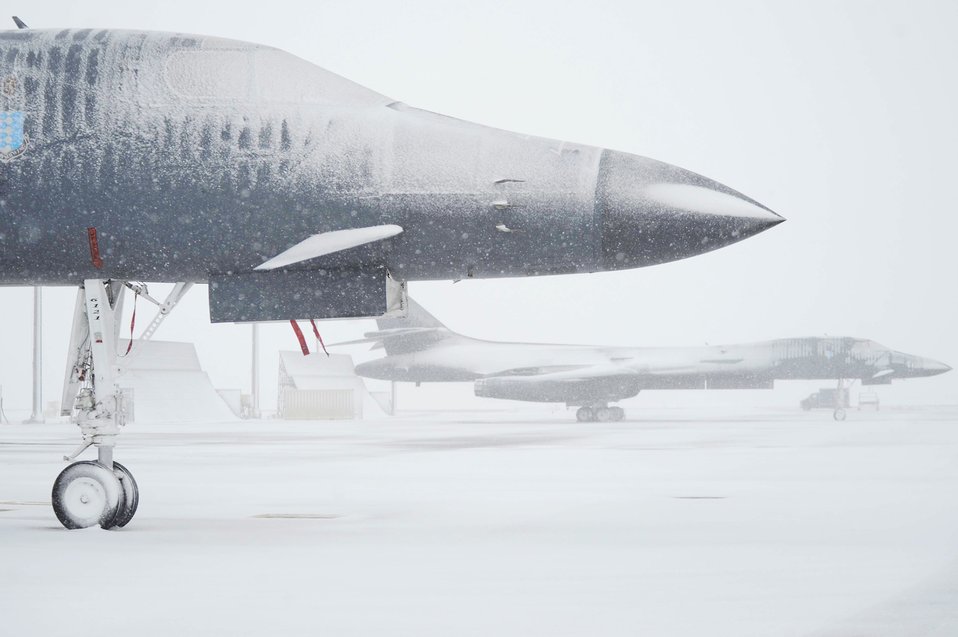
Baby, it's cold outside

The first big snowfall of the winter season collects on B-1B Lancers at the Ellsworth Air Force Base, S.D., flightline Oct. 29, 2009. The B-1 serves as the supersonic component of the Air Force's long-range bomber force, along with the subsonic B-52 Stratofortress and B-2 Spirit.